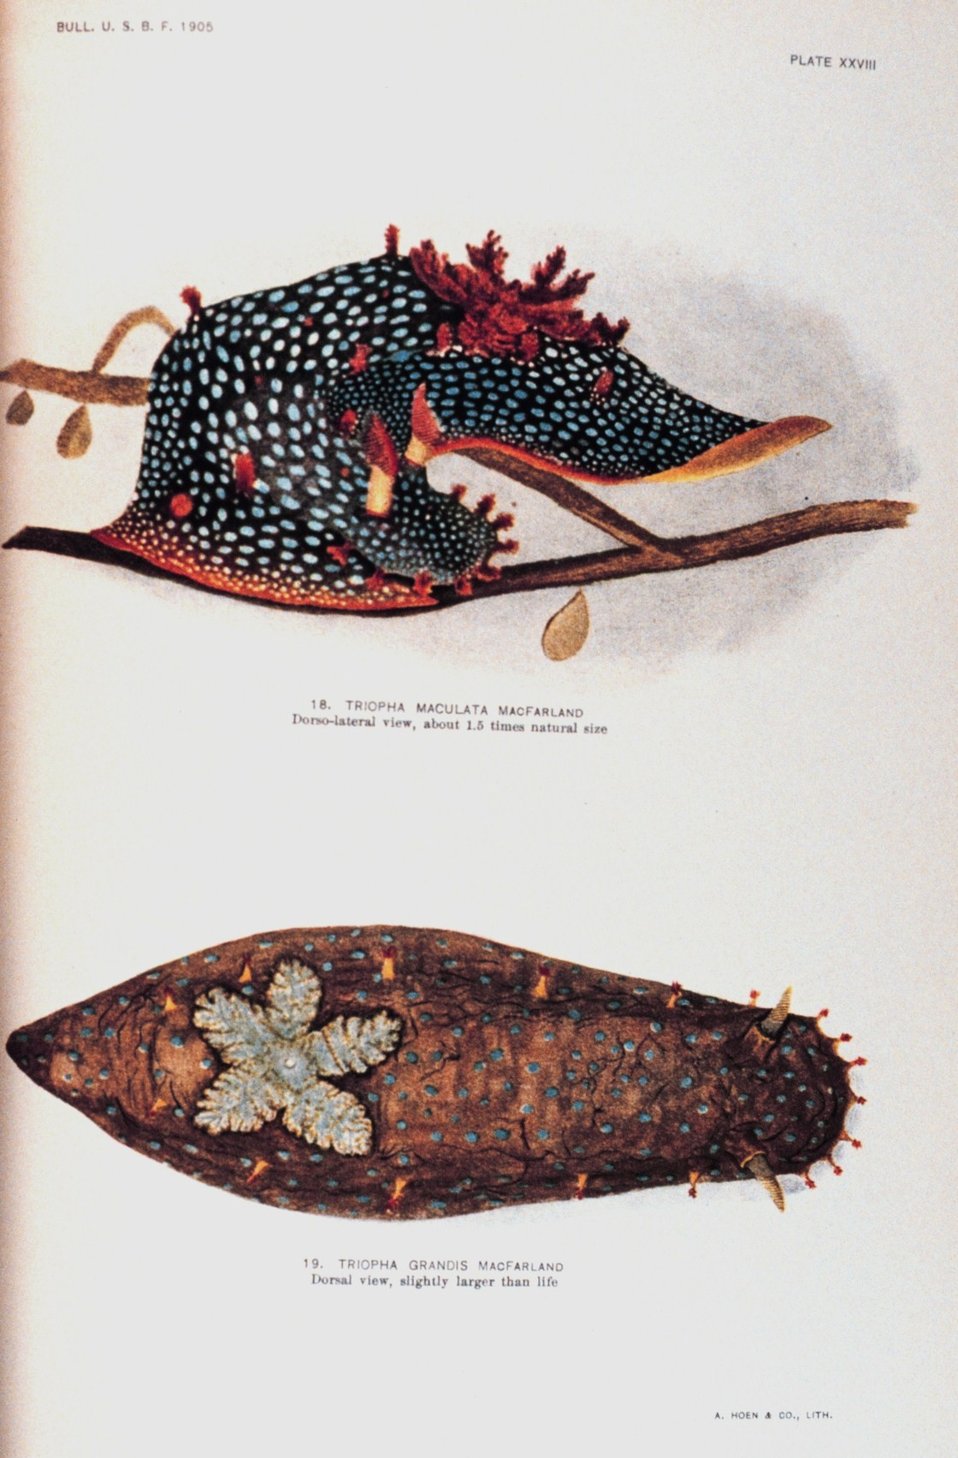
Nudibranchs. 18. Triopha maculata MacFarland - Dorso-lateral view. 19. Triopha grandis MacFarland - Dorsal view. 18 painted by Anna B. Nash of the Hopkins Seaside Laboratory. In: 'Opisthobranchiate Mollusca from Monterey Bay ....', Bulletin of the Bureau of Fisheries, Volume 25, 1905. P. 151, Plate XXVIII.